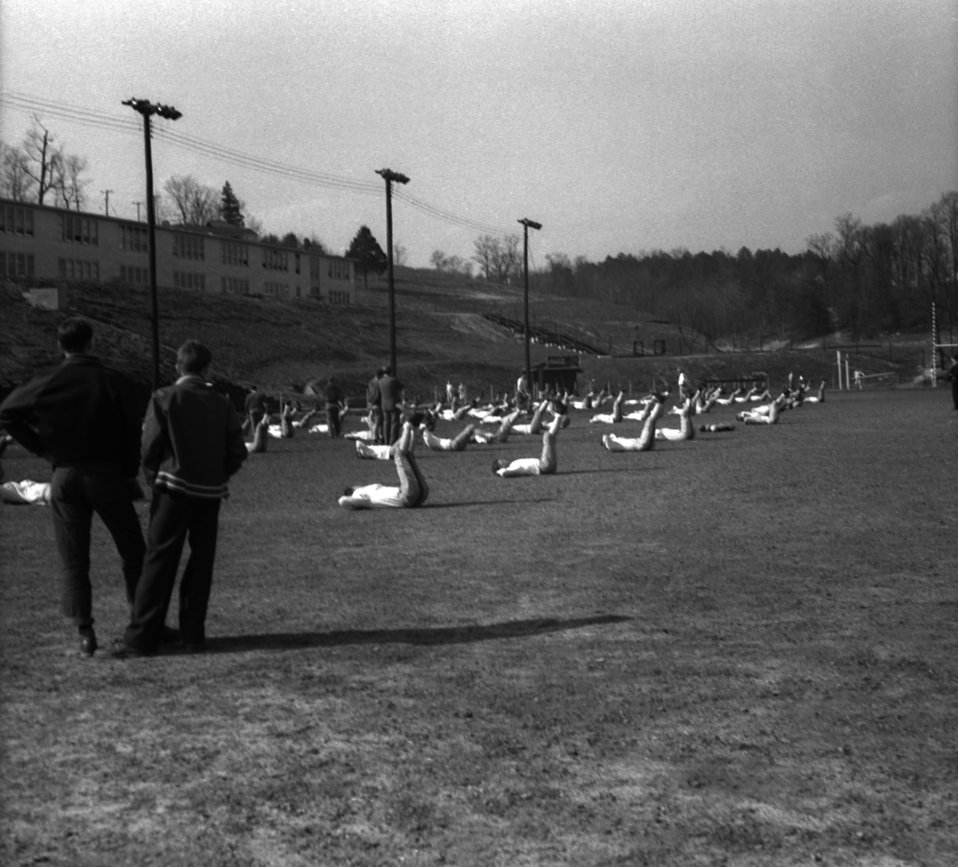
High School Football Spring Practice 1

4380b DOE photo by L. P. Stokes
Oak Ridge Tennessee 3-10-1948